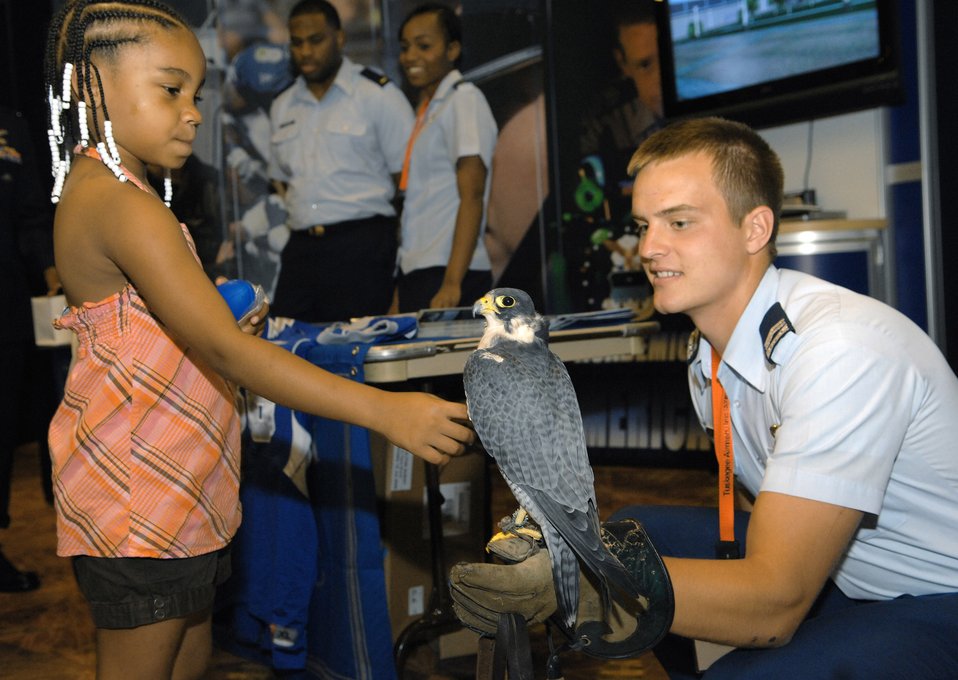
Don't fly away

U.S. Air Force Academy Cadet Corey Lohmiller introduces Obilio, a peregrine falcon, to 6-year-old Jordyn Irick July 17 at the Tuskegee Airmen National Convention in Philadelphia, Pa. Military members of all branches attend the conference.